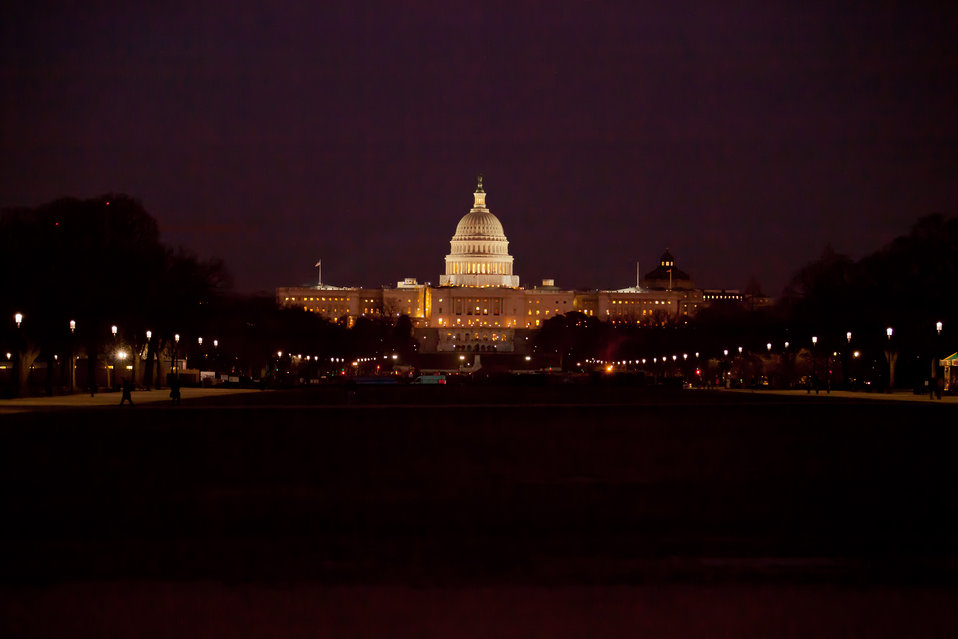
Facing East toward the Capitol Building, LED lights line the interior paths of the mall.